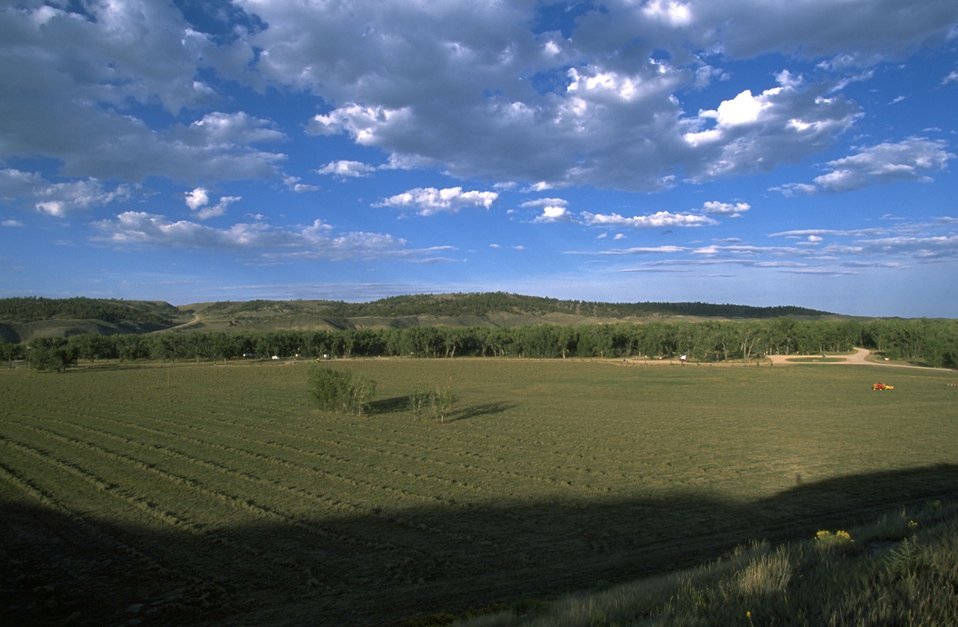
Kipp Recreation Area